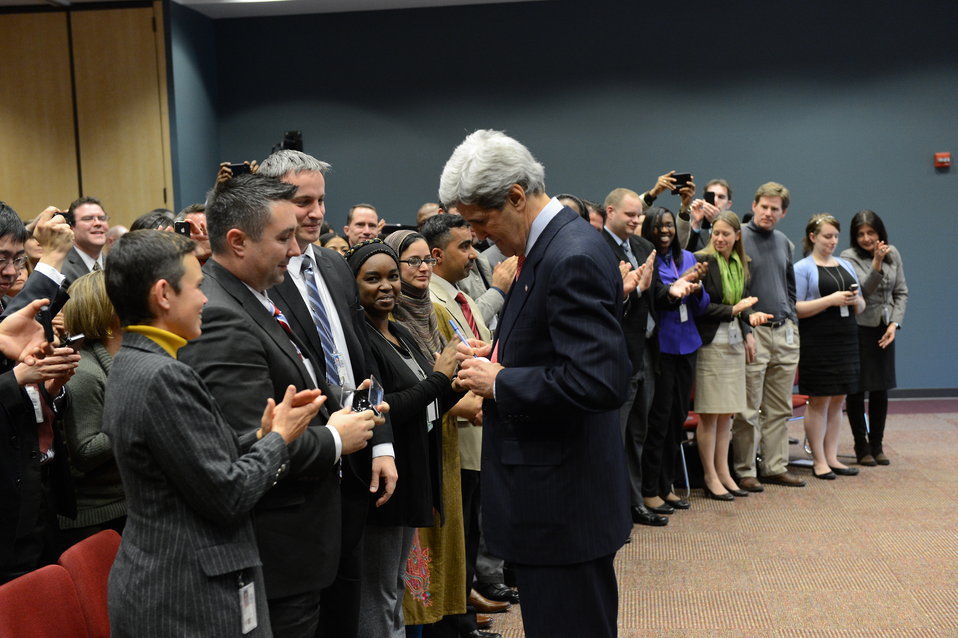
Secretary Kerry Visits the Foreign Service Institute

U.S. Secretary of State John Kerry shakes hands with officers and support personnel of the U.S. foreign affairs community at the Foreign Service Institute in Arlington, Virginia, on March 15, 2013.